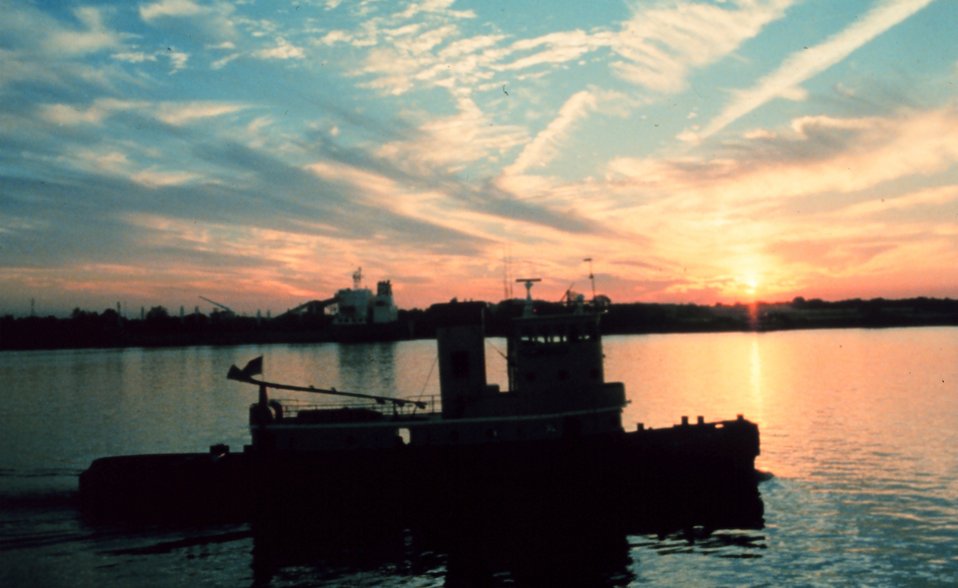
Sunset on the Mississippi River near downtown New Orleans.